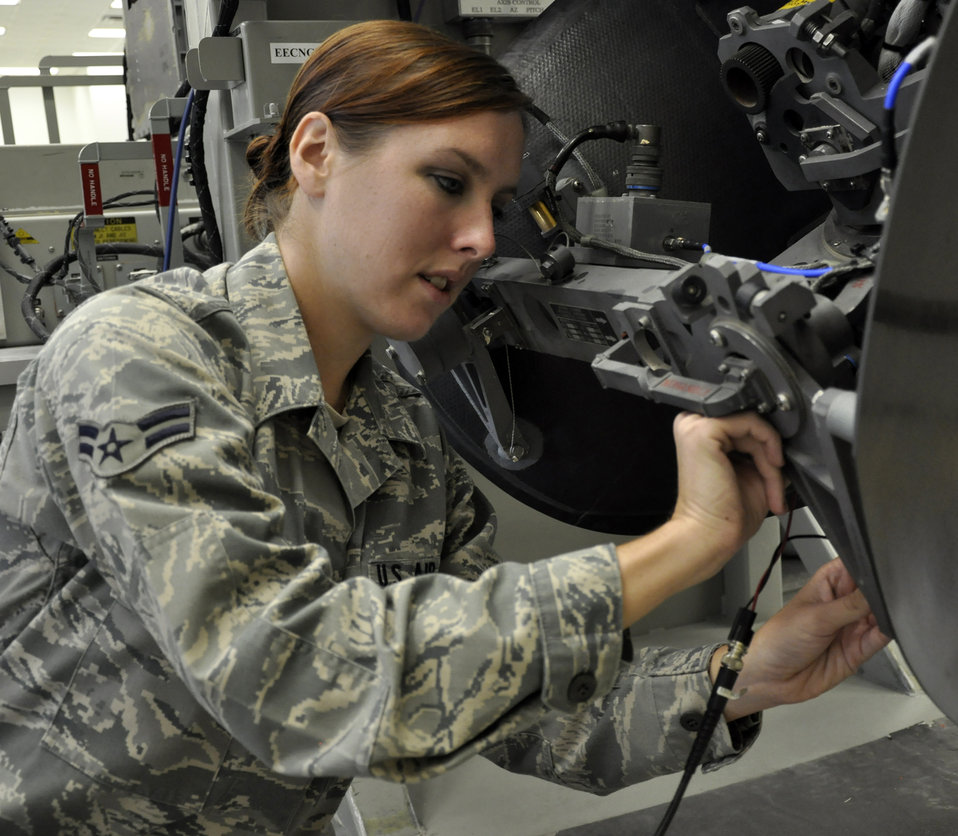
Getting a signal

Airman 1st Class Ashley Taylor checks the signals on a satellite receiver/transmitter July 7, 2011, at Hurlburt Field, Fla. Taylor is a mission systems journeyman assigned to the 1st Special Operations Component Maintenance Squadron.